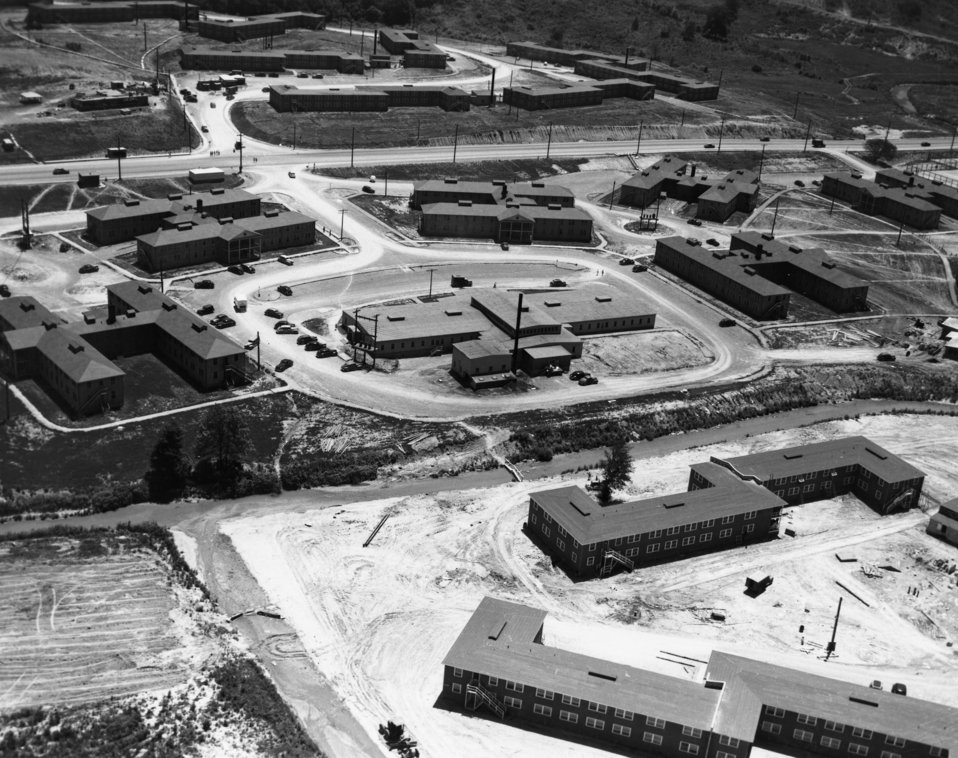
Aerial of Oak Ridge